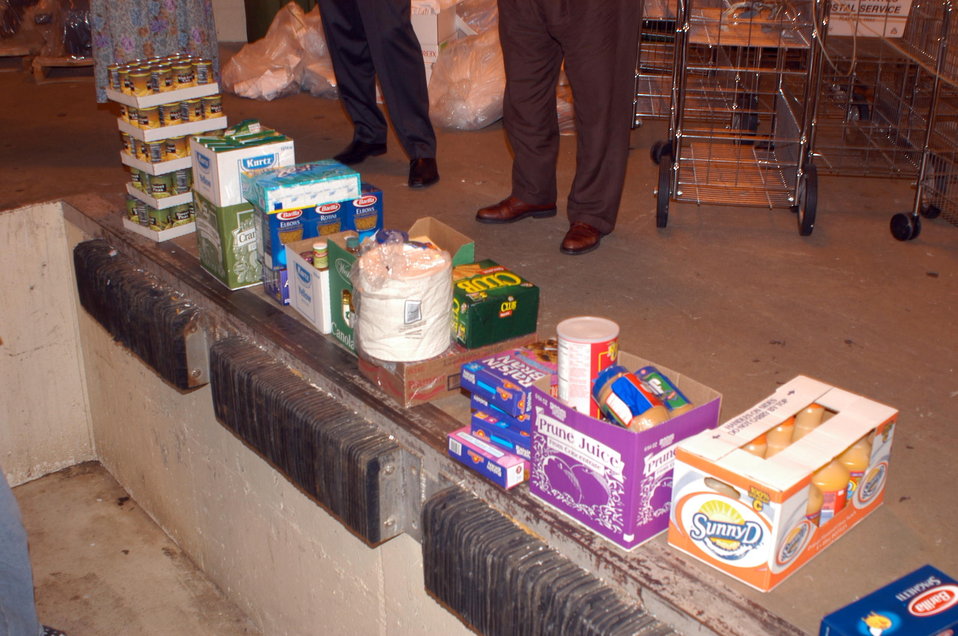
Sierra Exif JPEG